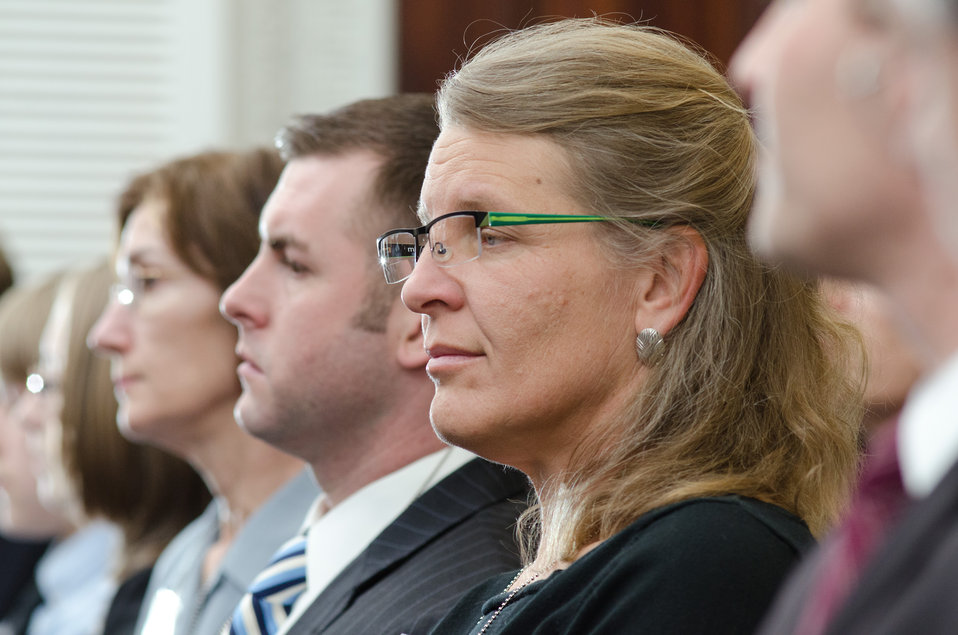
Northern Virginia Farmer and Professor of Applied Agriculture Ellen Polishuk (second from right), listens to Agriculture Deputy Secretary Kathleen Merrigan, White House Personal Chef and Food Policy Advisor Sam Kass and White House Office of Public Engagement Director Jon Carson speak at a Know Your Farmer Compass event that utilized twitter social media to continues the National Conversation on Local and Regional Food projects and how they offer economic opportunities to local farmers, ranchers and food entrepreneurs. Using the new web-based Know Your Food Compass, the conversation covered many aspects about food, such as infrastructure, stewardship, local meat and poultry, Healthy food access, careers in agriculture and local food knowledge. The virtual conversation took place at the White House, and Twitter was used to expand the conversation worldwide, from Washington, D.C., on Monday, March 5, 2012.